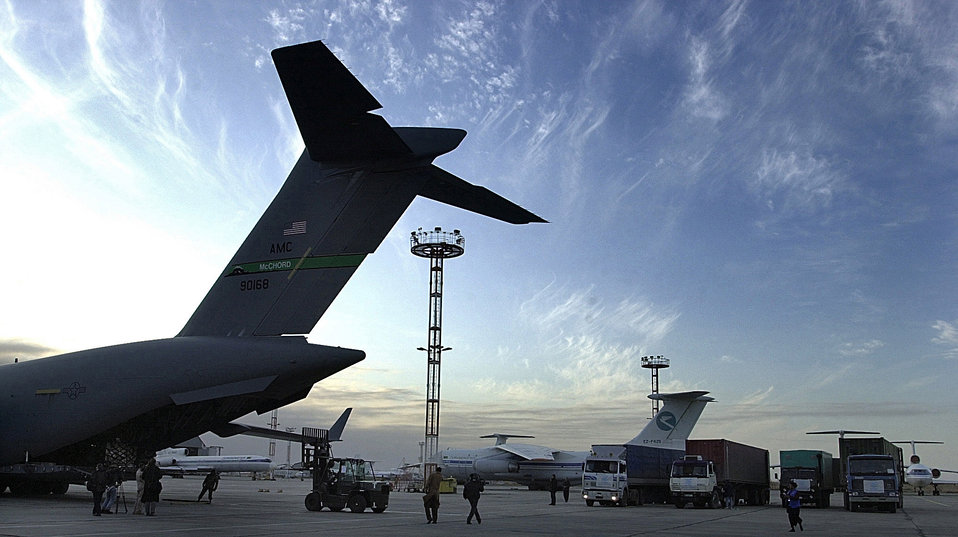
Off loading

OPERATIONS ENDURING FREEDOM -- Air Force Reservists from the 97th Airlift Squadron at McChord Air Force Base, Wash., and Airmen from the 723rd Aerial Port Squadron at Ramstein Air Base, Germany, offload pallets of humanitarian aid from a C-17A Globemaster III cargo aircraft at Ashgabat, Turkmenistan, on Dec. 10.